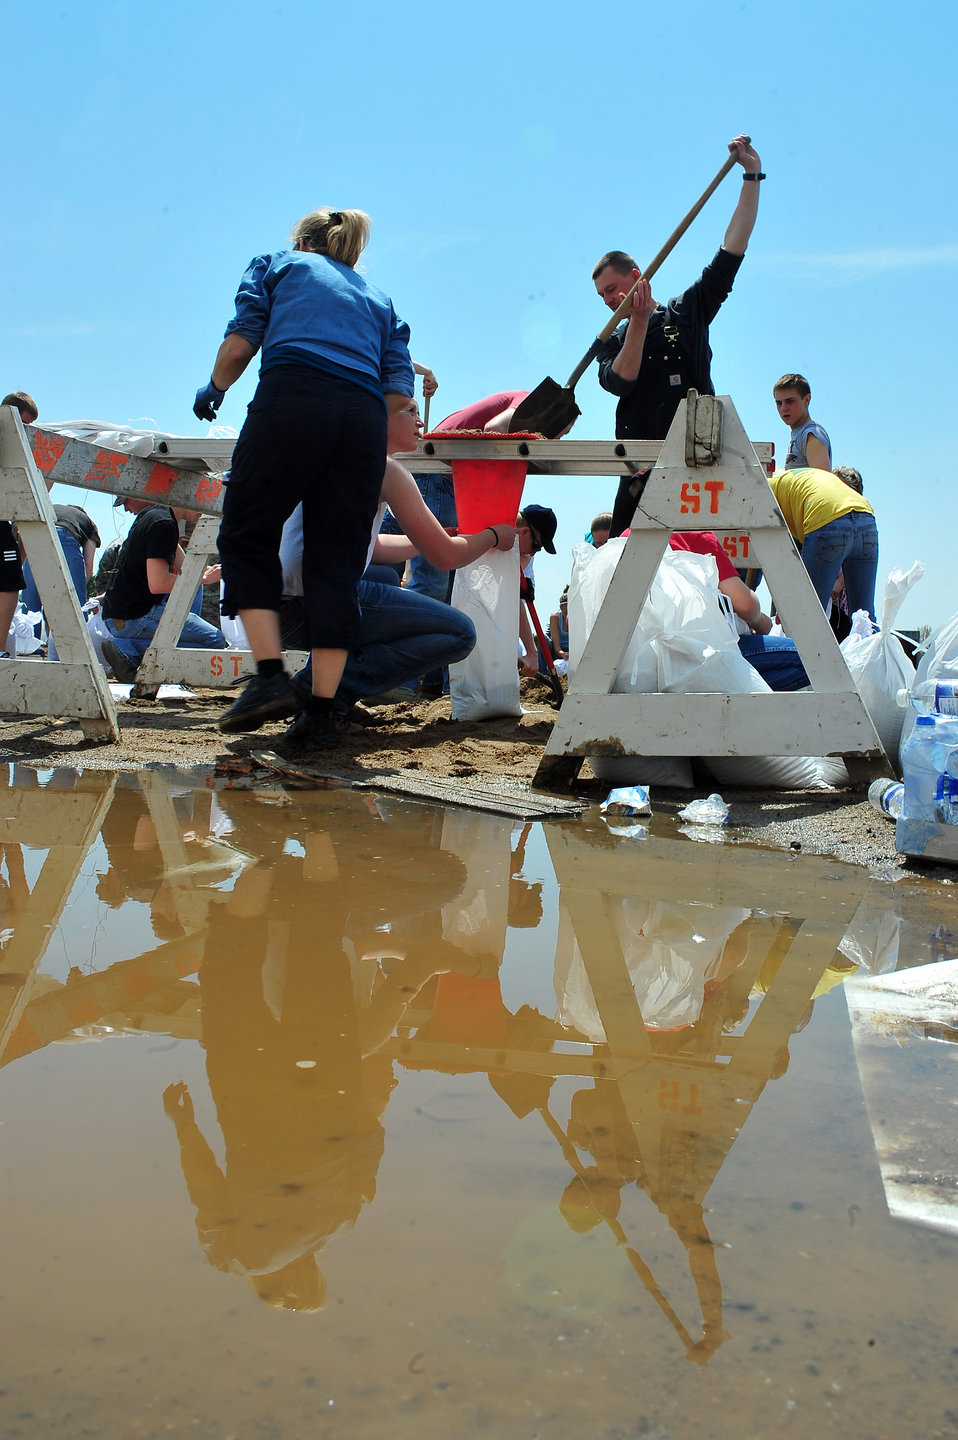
Minot Airmen help neighbors as flood water rises

Airmen and local citizens work together to make sandbags at the Minot Public Works June 1, 2011, in Minot, N.D. In preparation for possible flooding, the city of Minot, with assistance from Airmen from Minot Air Force Base, North Dakota National Guard as well as many other organizations, are setting up secondary dikes along the river. The Souris River threatens to break the levies already in place, thousands of Minot citizens, including military members, their families and DOD civilians, have been forced to evacuate the area.